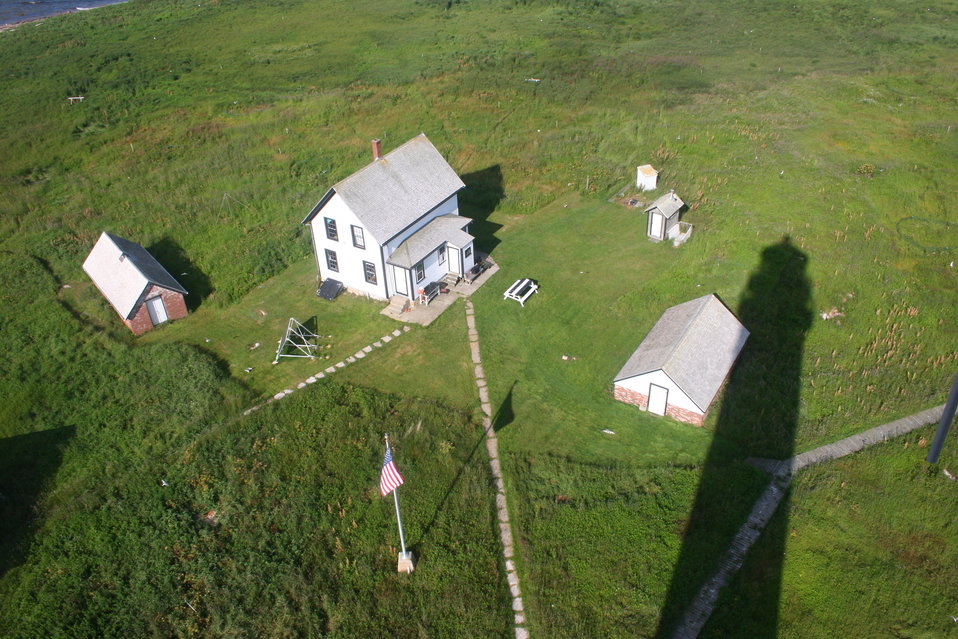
View From the Lighthouse